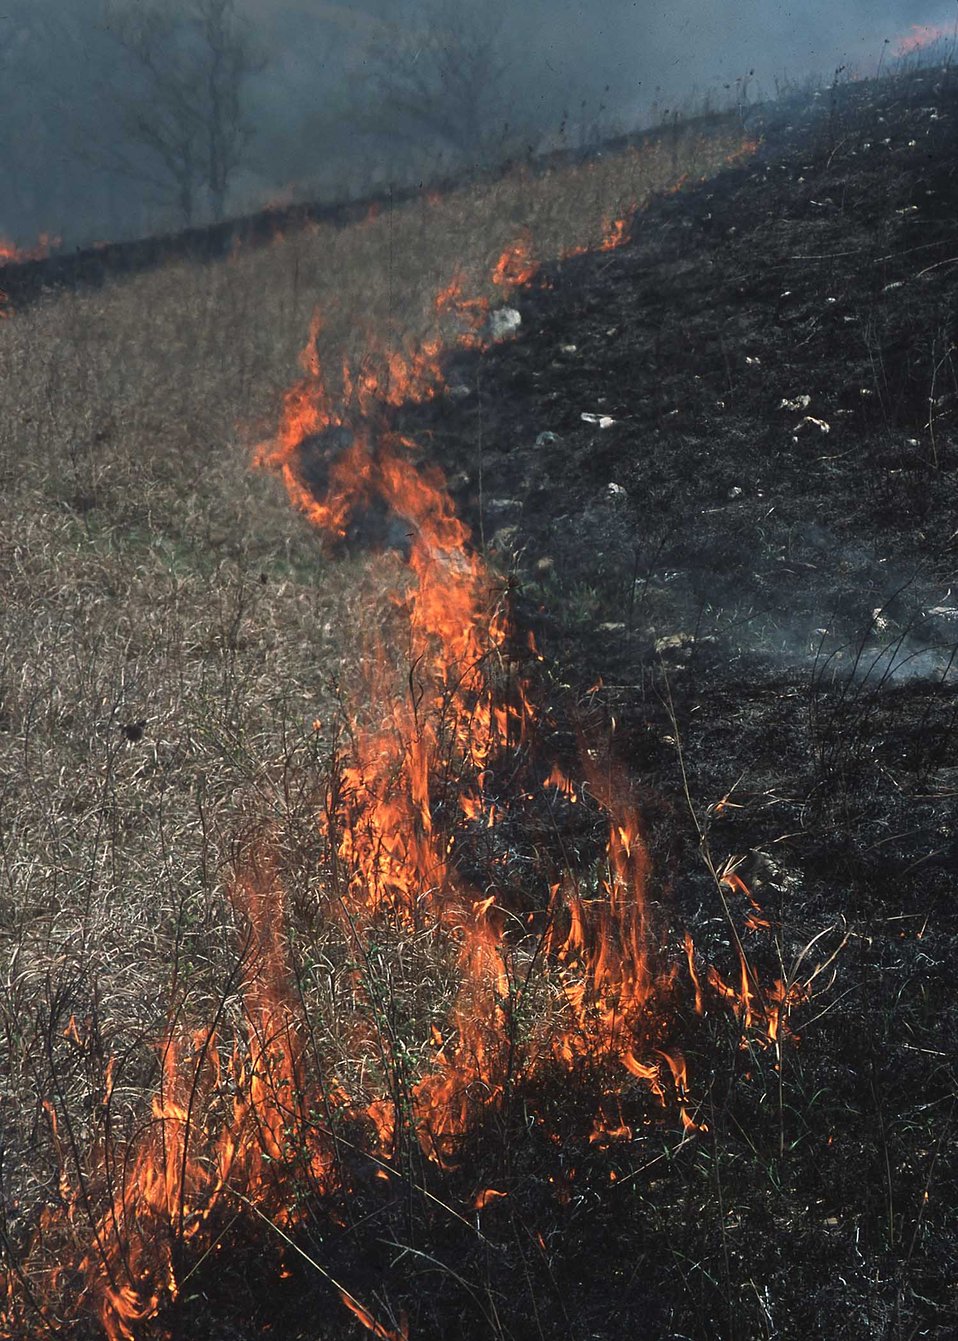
Prairie burn to stimulate new growth and recycle nutrients. Konza Biological Research Station, Manhattan, KS.